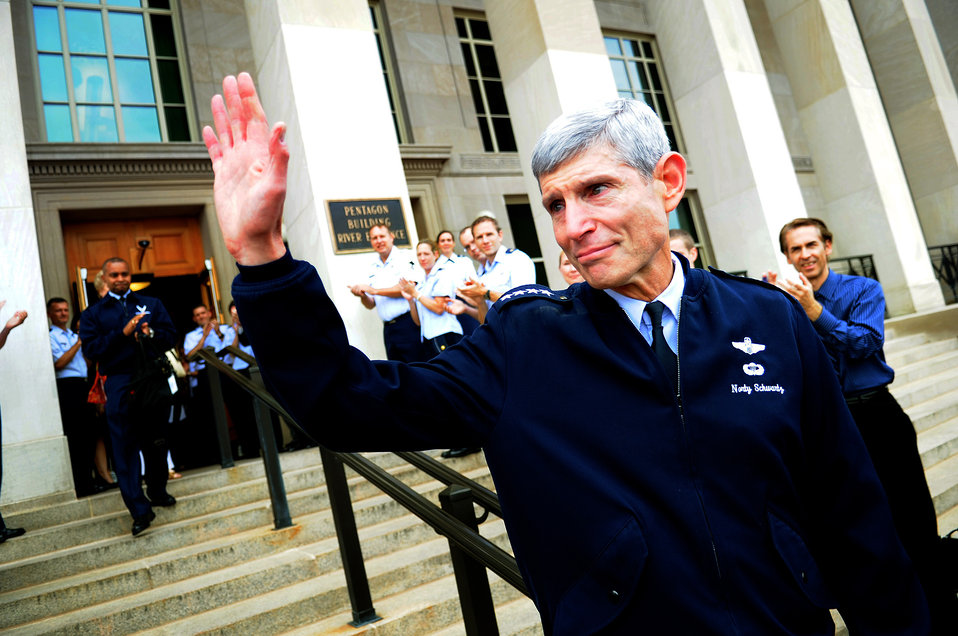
AF Chief of Staff

Gen. Norton Schwartz bids farewell to his Airmen while departing from the Pentagon Aug. 8, 2012, for the final time as the Air Force Chief of Staff. Schwartz will retire in a ceremony Friday, after serving 39 years in the Air Force, the last four years as the Air Force's senior uniformed leader.